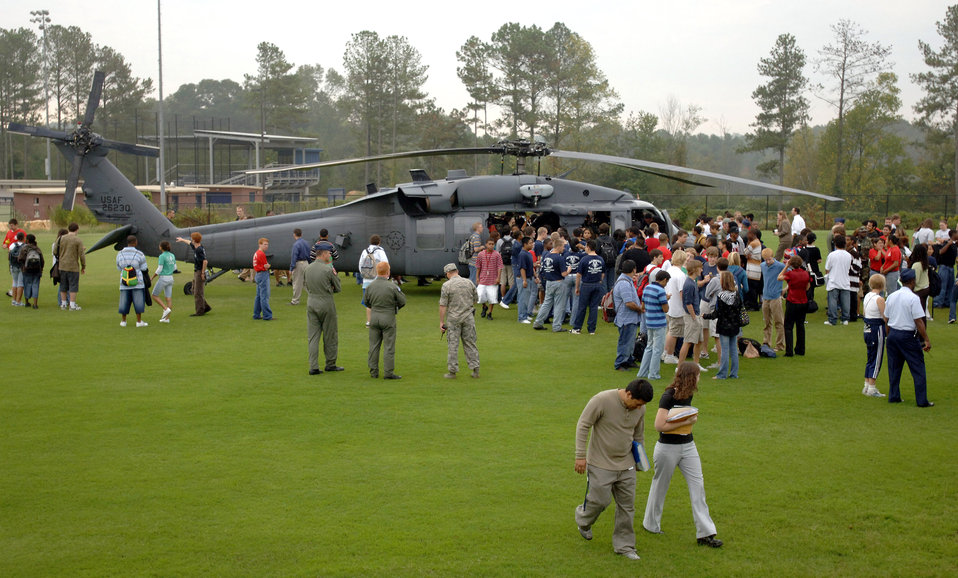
Airmen visit schools as part of Air Force Week Atlanta

Marietta High School students interact with a HH-60G Pave Hawk helicopter as part of an Air Force Week Atlanta event Oct. 9 at Marietta High School in Marietta, Ga. The event helped to educate students about the U.S. Air Force.